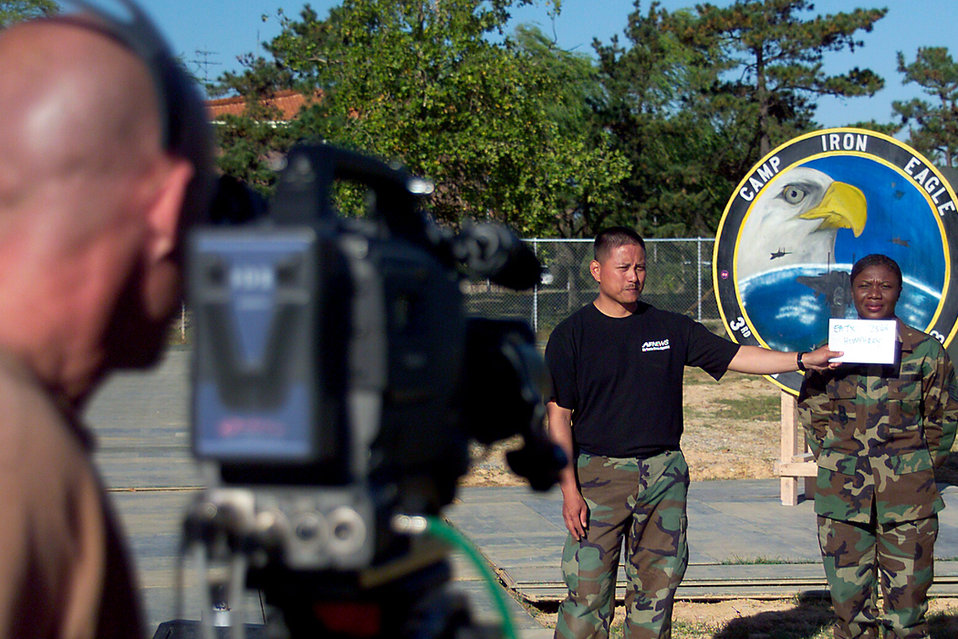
Holiday greetings team visits Gwangju

GWANGJU AIR BASE, South Korea -- Senior Master Sgt. Carol Humphrey prepares to record her holiday greeting Oct. 12. as Tech Sgt. Gerard Banayad holds a greetings form for light balance. In three-and-a-half hours, 126 Soldiers and Airmen sent holiday greetings home to family members worldwide. Sergeant Banayad is part of the Army and Air Force Hometown News Service holiday greetings team. Sergeant Humphrey is chief of supply with the 3rd Air Expeditionary Logistics Readiness Squadron.